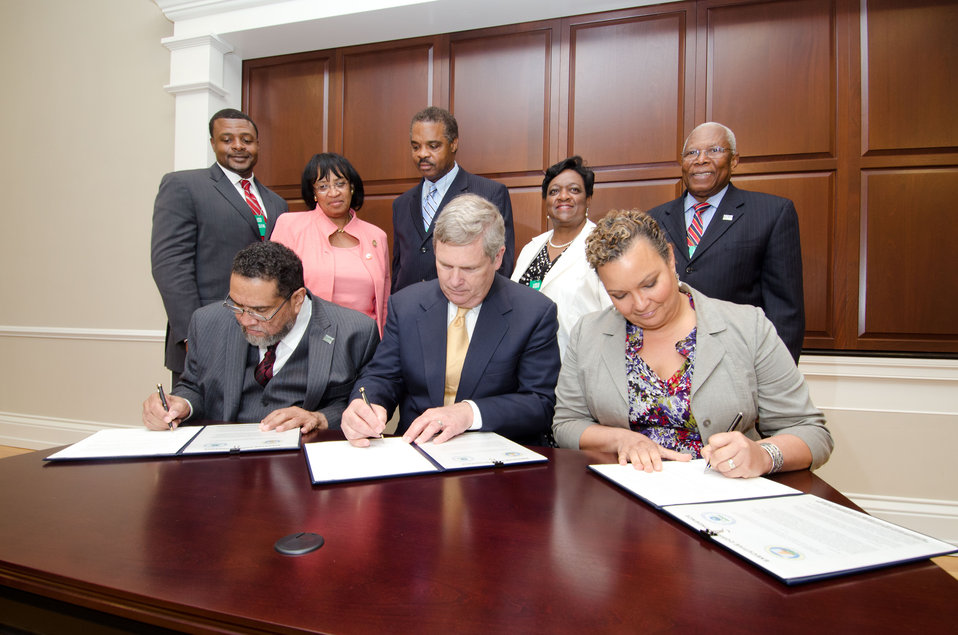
Left to right Tuskegee University President and Council of 1890 Universities Chair Gilbert Rochon, Agriculture Secretary Tom Vilsack and Administrator of the Environmental Protection Agency (EPA) Lisa Jackson sign the 2012 Memorandum of Understanding among the department, agency and council on Friday, June 29, 2012, in Washington, DC. It has been150 years since the first Morrill Act of 1862, which was signed by President Abraham Lincoln. The action established land-grant universities in every state and territory. The second Morrill Act of 1890 provided funding to designate separate institutions of higher learning for blacks in those states that did not open the doors of their universities to black students.